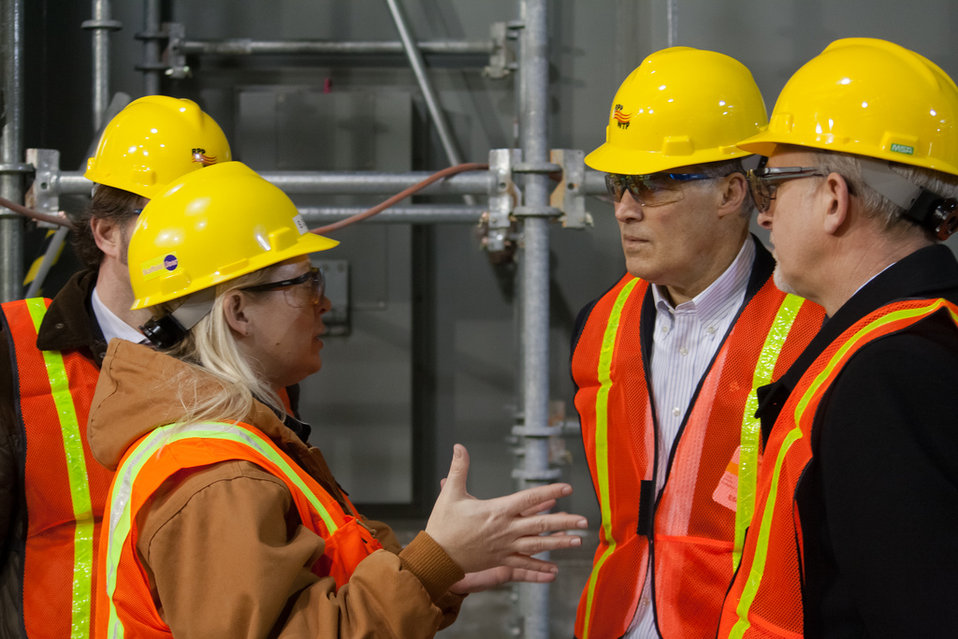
Inslee Visit at Hanford

Washington State Governor Jay Inslee, accompanied by Senior Advisor for Environmental Management Dave Huizenga, visits Hanford Tank Farms and Waste Treatment Plant